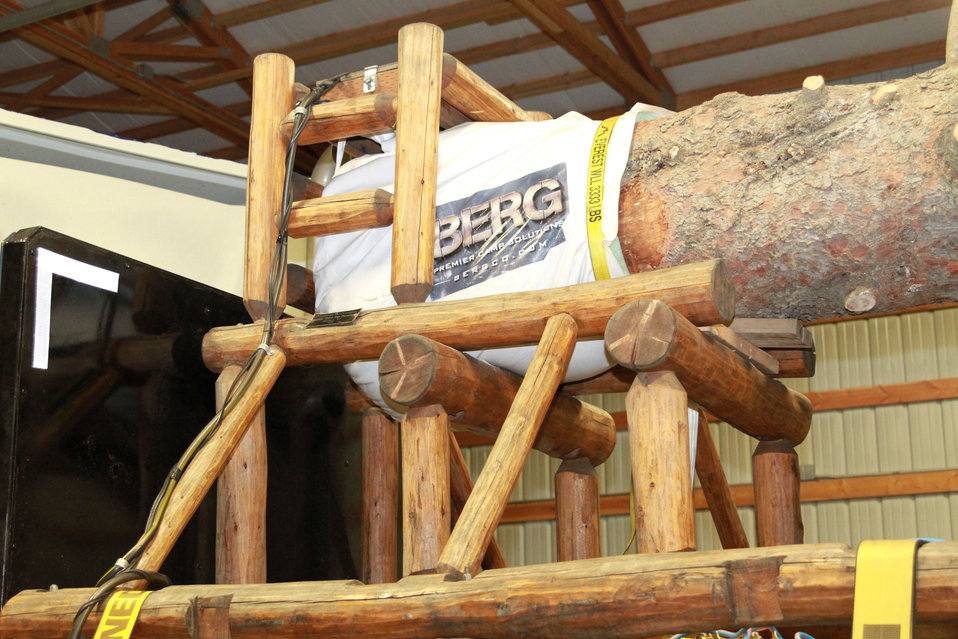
Colville National Forest personnel prepare the official 2013 Capitol Christmas Tree for transport on Nov. 4, 2013. The Capitol Christmas tree is an 88-foot tall Engelmann spruce that was harvested at Colville National Forest in Washington on Nov. 1, 2013.